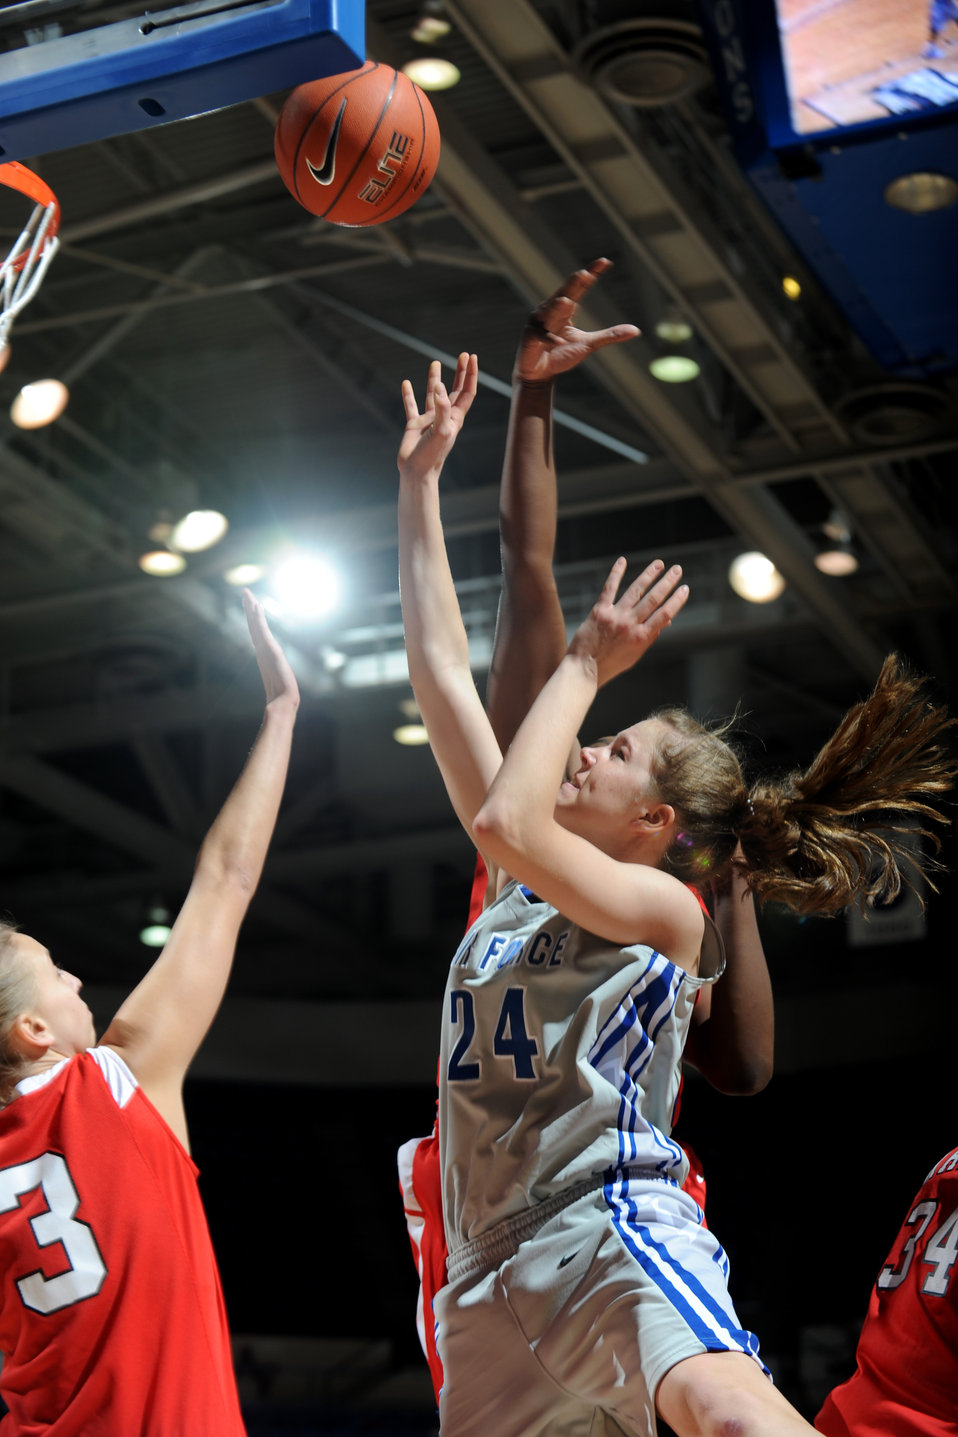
Women's basketball: Bradley University runs past Air Force

U.S. Air Force Academy freshman forward Katie Hilbig attempts a shot during the Falcons game against Bradley University at the Academy's Clune Arena Dec. 19, 2009.